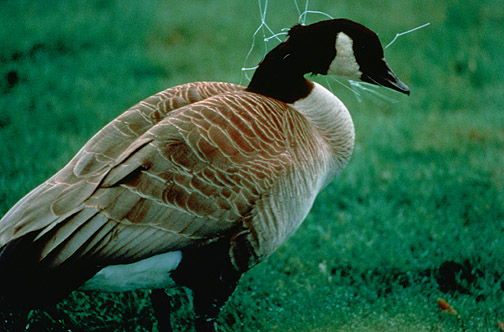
Entangled Canada Goose.